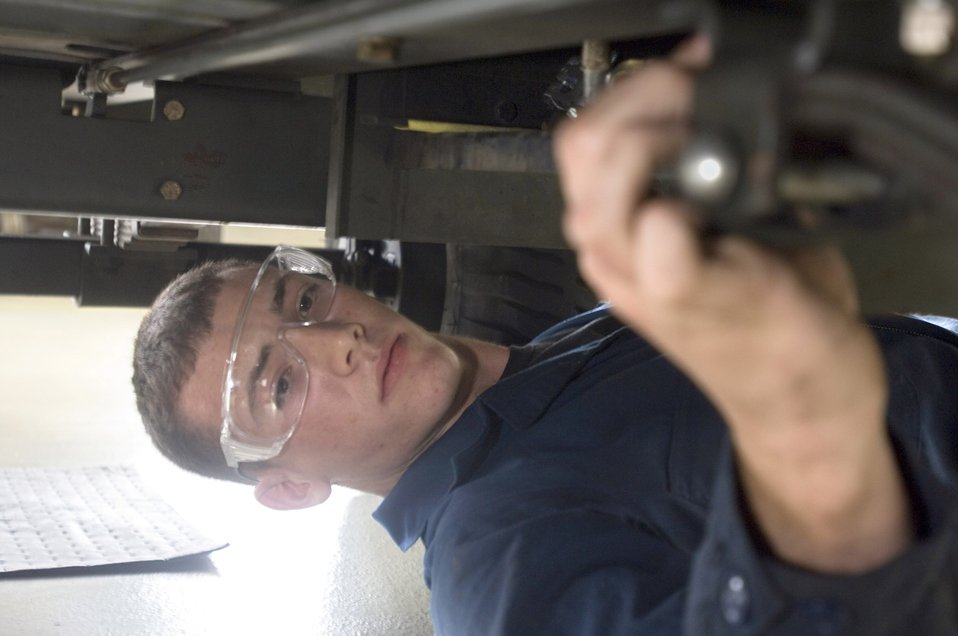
Sembach squadron maintains war reserves

Senior Airman Grant Newnom performs a periodic inspection on a piece of aerospace ground equipment Sept. 20 at Sembach Air Base, Germany, ensuring it is ready for immediate worldwide deployment. Airman Newnom is an aerospace ground equipment specialist with Sembach's 435th Materiel Maintenance Squadron.